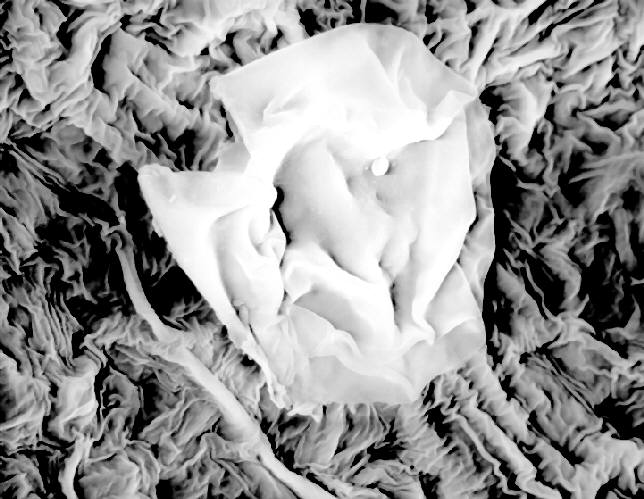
Scanning electron micrograph (SEM) of basil leaf, Ocimum basilicum.